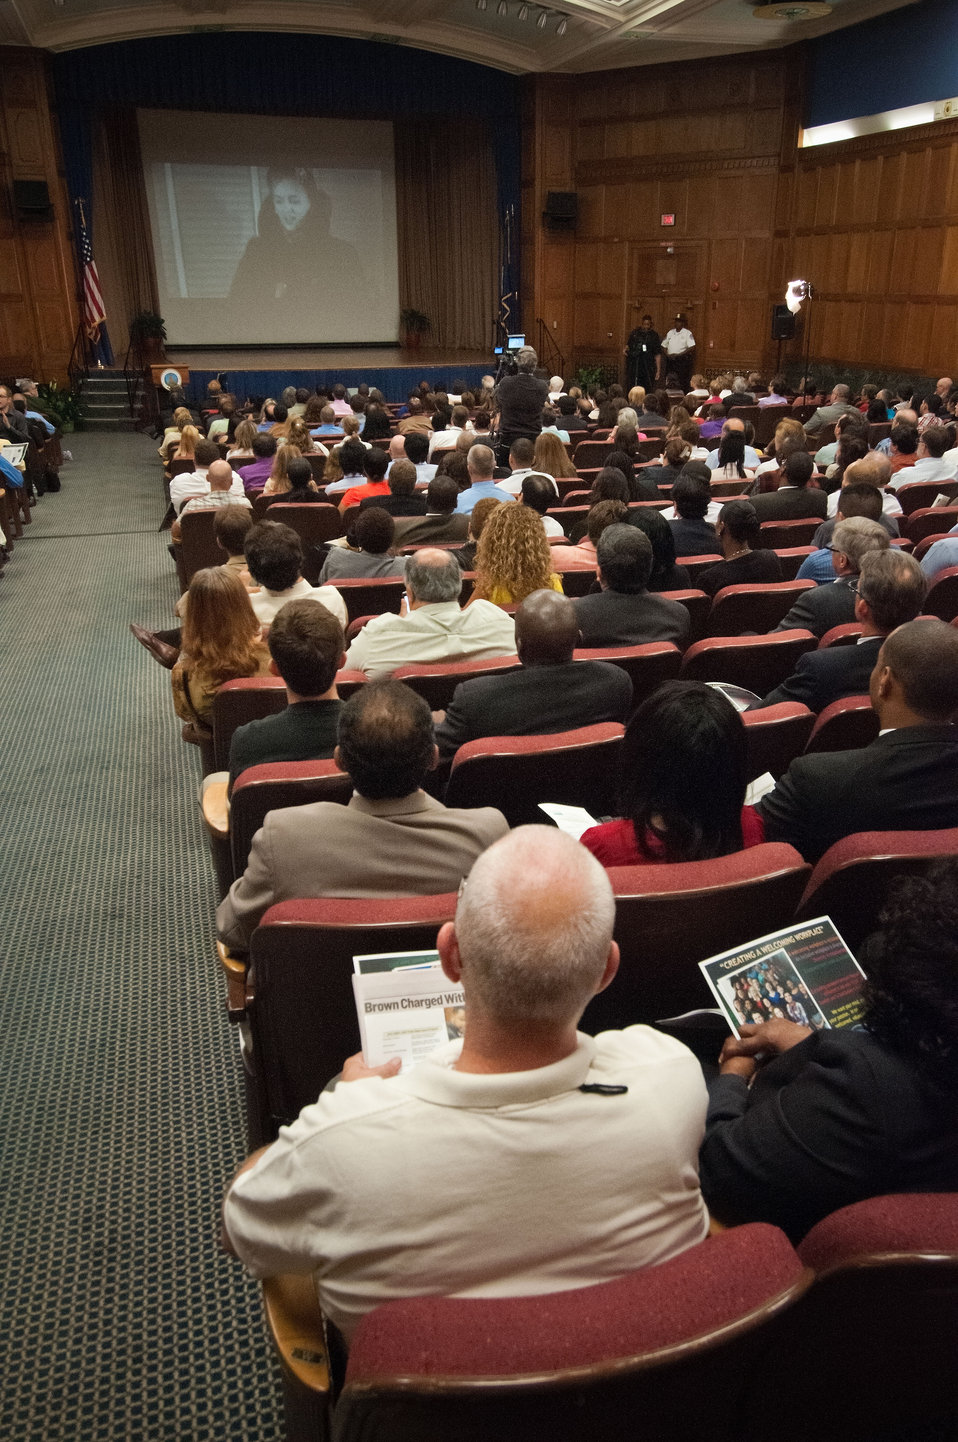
United States Department of Agriculture employees watch a video montage created by Bill Aley, National, Lesbian, Gay, Bisexual and Transgender (LGBT) Special Emphasis Program Manager, Animal and Plant Health Inspection Service at the LGBT Pride Observance, “The Sum of Us: Lesbian, Gay, Bisexual and Transgender Pioneers” at the United States Department of Agriculture in Washington, D.C., Thursday, June 7, 2012.